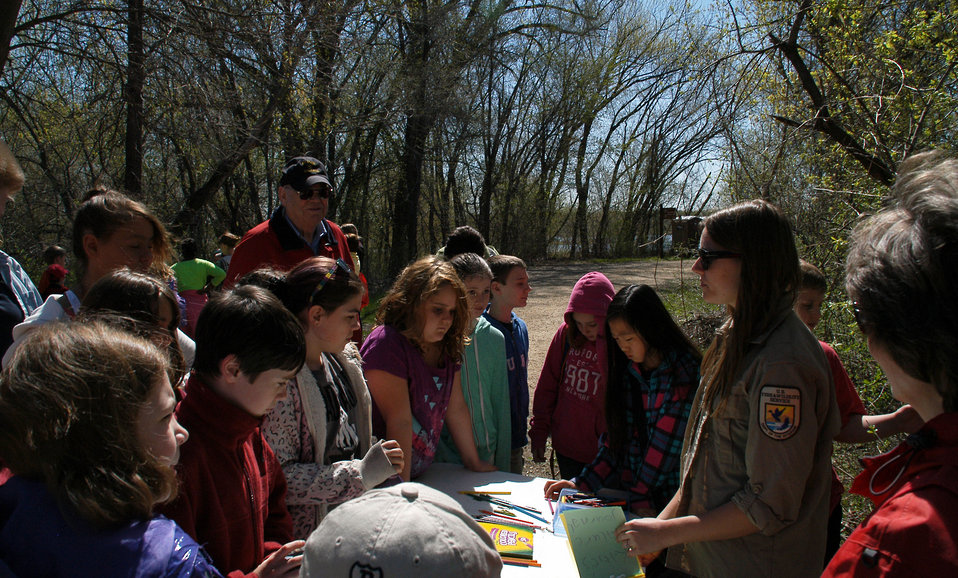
Nature Journal Station

Minnesota Valley National Wildlife Refuge Intern Katie Laughlin talks with the students about creating a nature journal for the day.